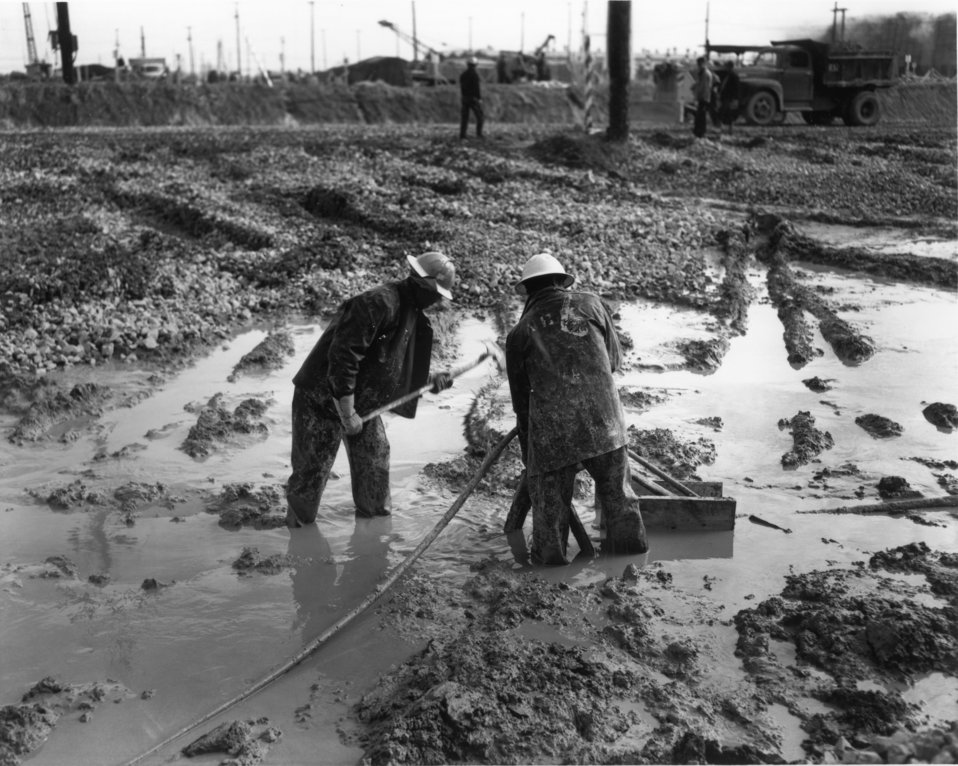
Road building Oak Ridge

MED309 DOE photo by Ed Westcott 1944 Oak Ridge tennessee